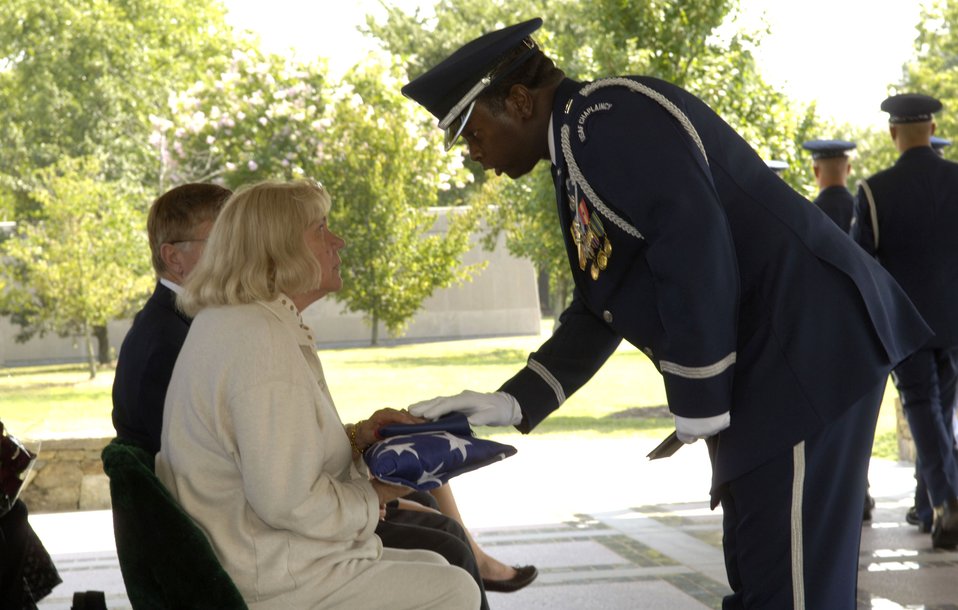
Chaplains provide honored service

Chaplain (Capt.) Richard Black is one of three Air Force chaplains assigned to Arlington National Cemetery to preside over funerals for Air Force members to be buried there. Each of the services has chaplains assigned and collectively, they conduct an average of 27 funerals a day.